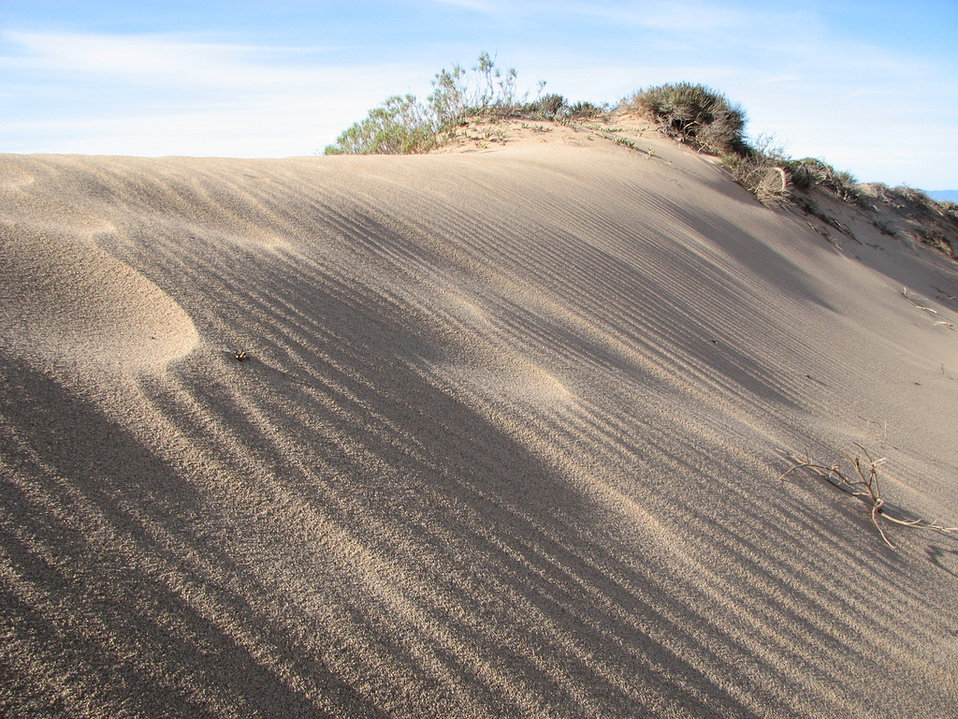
Antioch Dunes National Wildlife Refuge, CA